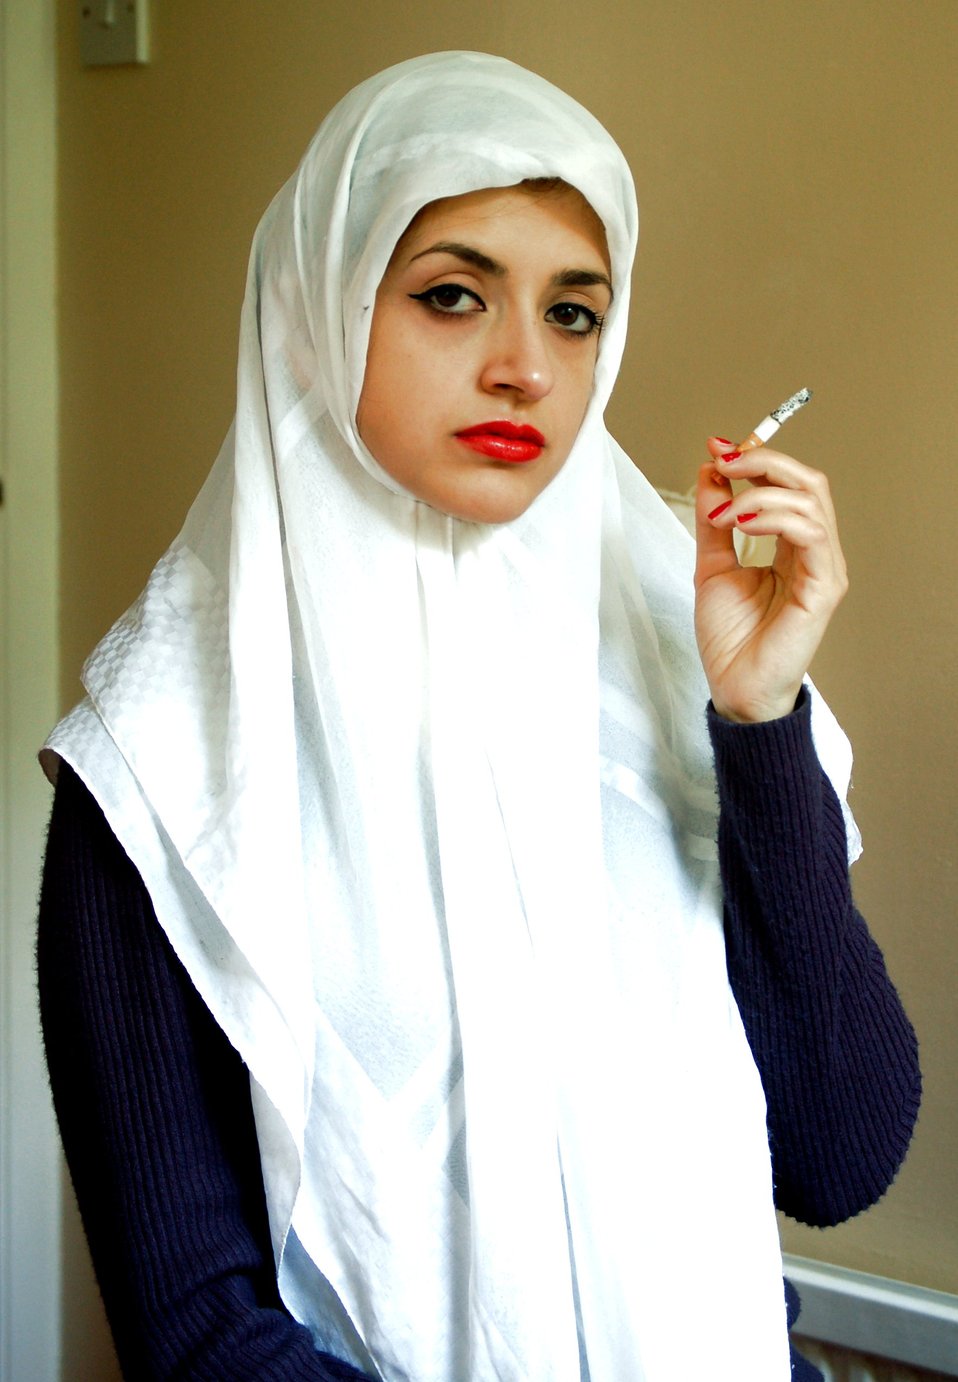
'White Girl' - digital print - 60 x 40 'White Girl' by Sarah Maple Sarah Maple